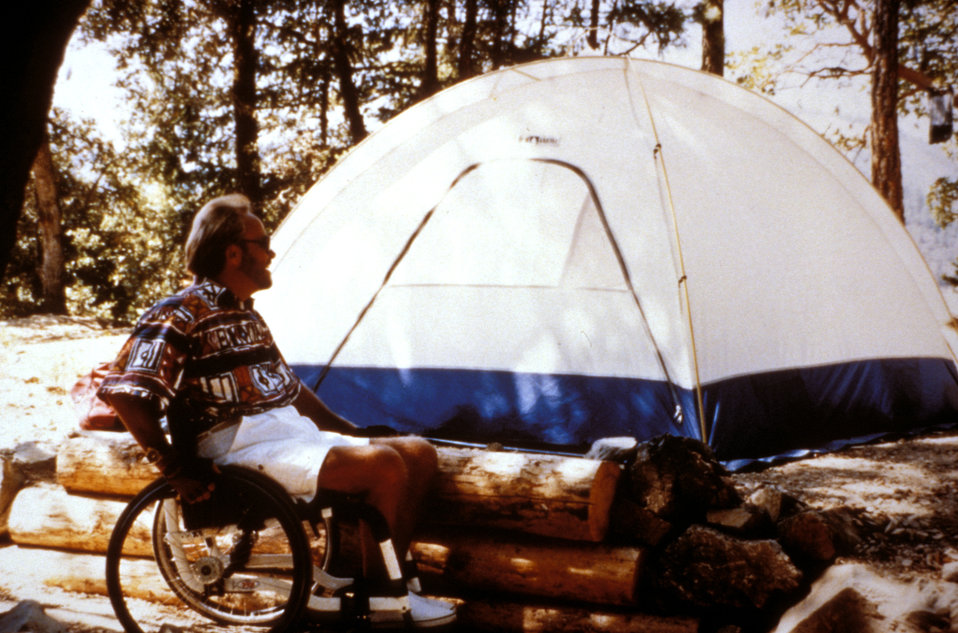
This 1995 image depicted a man seated in his wheelchair that was positioned in front of a log retaining wall with a domed tent in the background, situated atop an elevated dirt camping site. The wall height of approximately 18 inches minimized the effort needed to transfer in and out of a wheelchair onto the tent level. The wall is also at a good height for others to sit, and makes it possible to communicate at the same eye level as the wheelchair user. Designing recreation sites with the mobility-challenged in mind, makes for an overall more user-friendly environment for all, and is quite often, made even more efficient from a utilitarian standpoint.